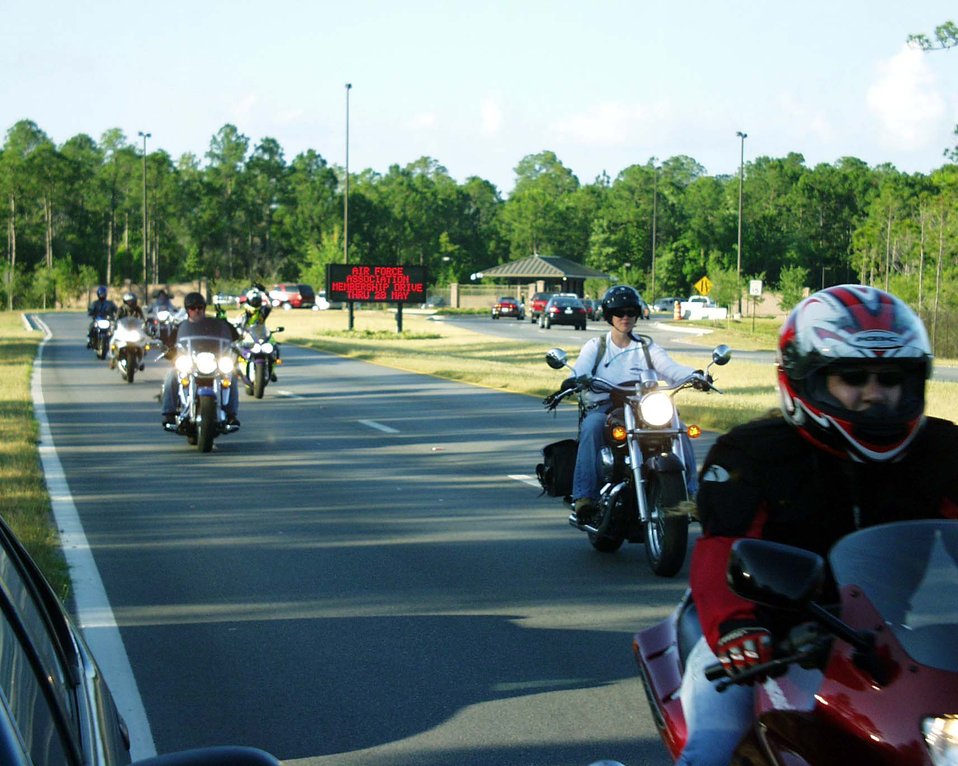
Freedom ride

HURLBURT FIELD, Fla. -- Motorcyclists from the Sentinels of Freedom, Hurlburt Field's motorcycle club, ride out the gate here on their way to the Vietnam Veterans Memorial in Washington to honor all those who paid the ultimate price for freedom. They are participating in